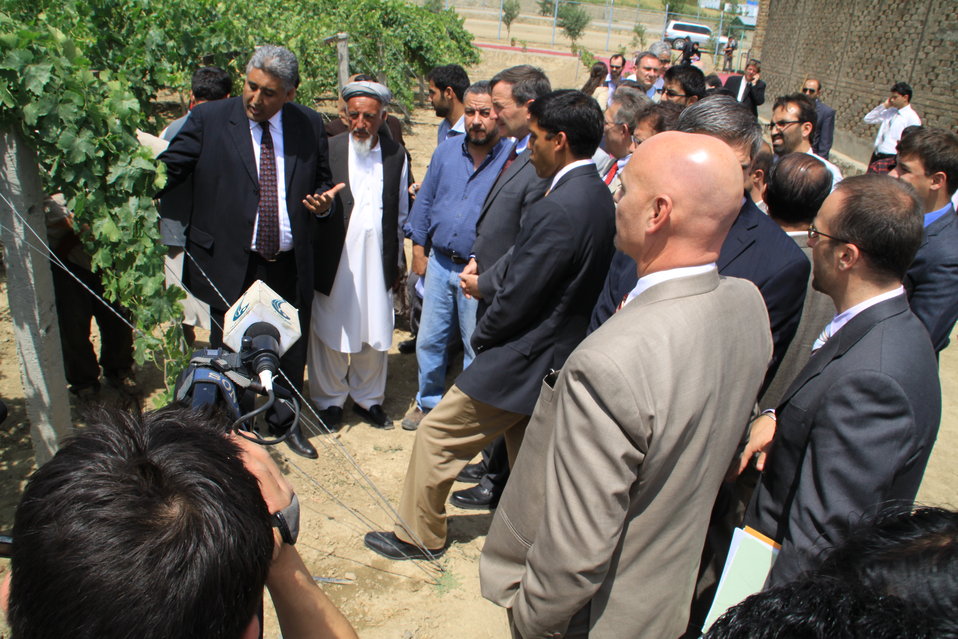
Badam Bagh Farm